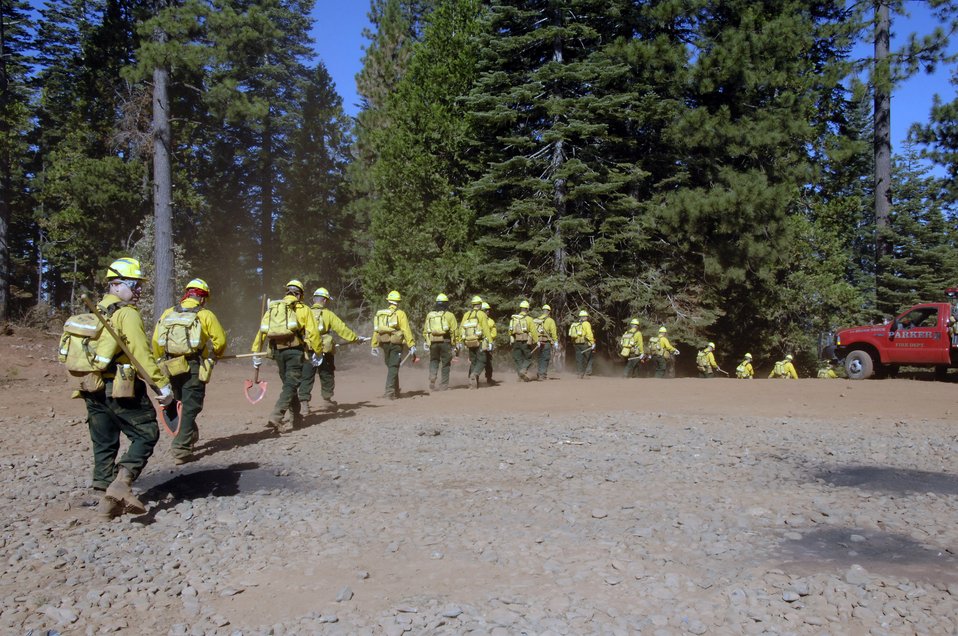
Fighting fires in California

Members from the California Air National Guard's 129th Rescue Wing, 144th Fighter Wing, 146th Airlift Wing, 163rd Reconnaissance Wing and 162nd Combat Communications Group head out to the forest outside of Paradise City, Calif., July 27 to conduct fireline training during Operation Lightning Strike. California Air National Guard officials activated more than 200 members from the various Wings in California to help fight the wildland fires in Northern California.